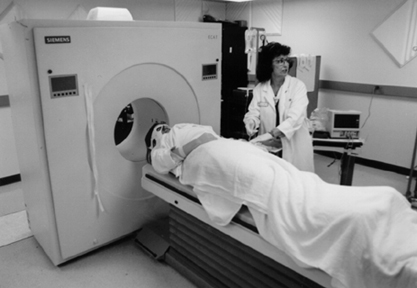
PET Scanner

A research subject is positioned to enter the PET scanner.